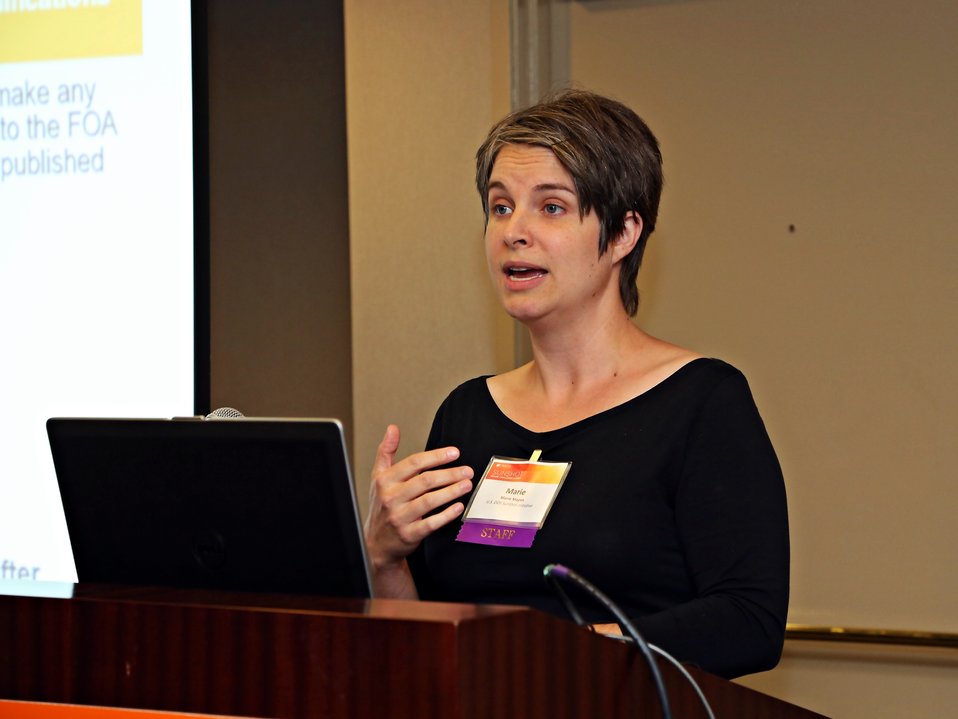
Breakout Sessions 3